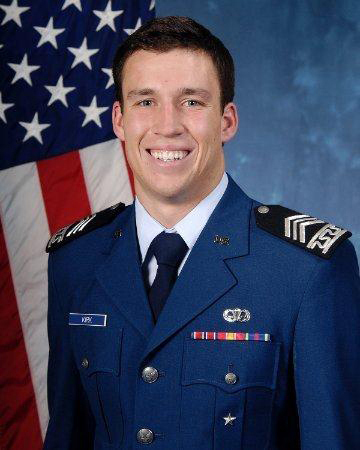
Cadet saves life

Air Force Academy Cadet Christopher Kirk recently saved the life of one individual after arriving on the scene of a horrific vehicle accident on I-395 in Washington, D.C. during the early hours of June 9, 2012. Kirk has just finished his third year at the Academy and is attending a five week internship at the Pentagon.